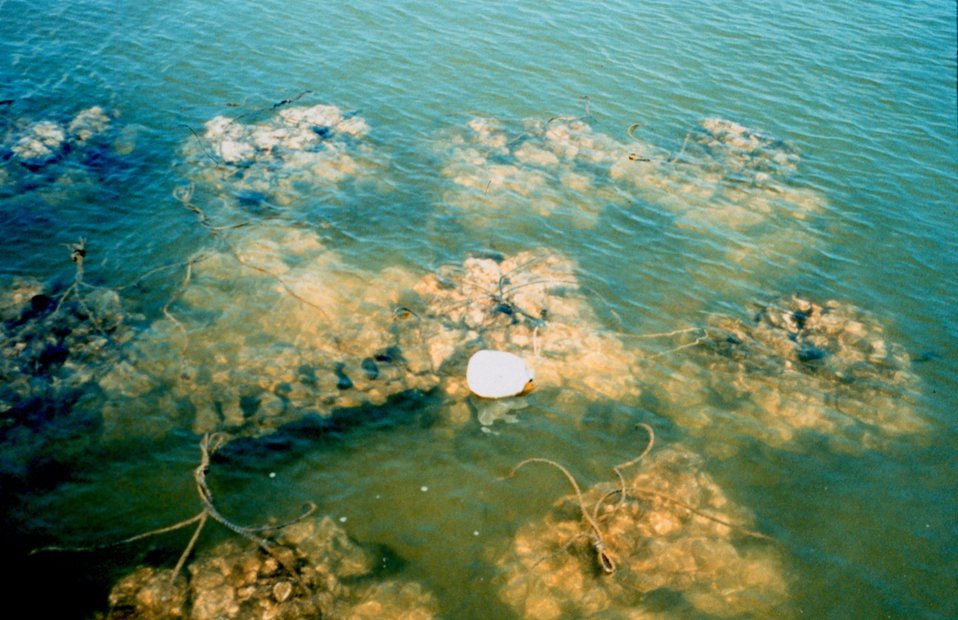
Shells containing oyster spat raised by the Oyster Recovery Partnership are bagged and placed on pallets to grow before being transplanted to a designated oyster reef elsewhere in the Chesapeake Bay.